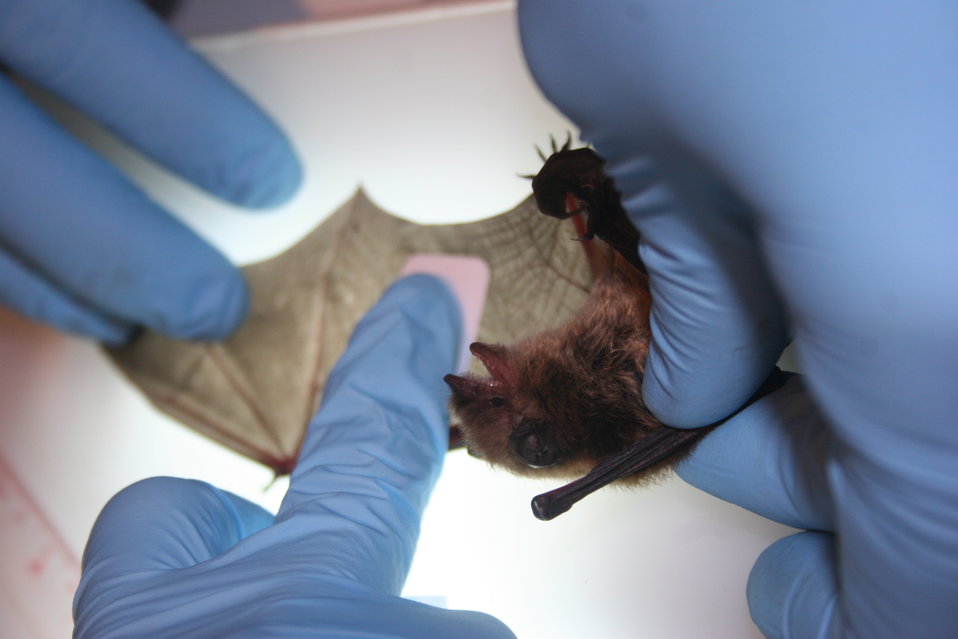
Taking sebum sample from bat wing

Biologists and researchers take sebum samples for analysis.